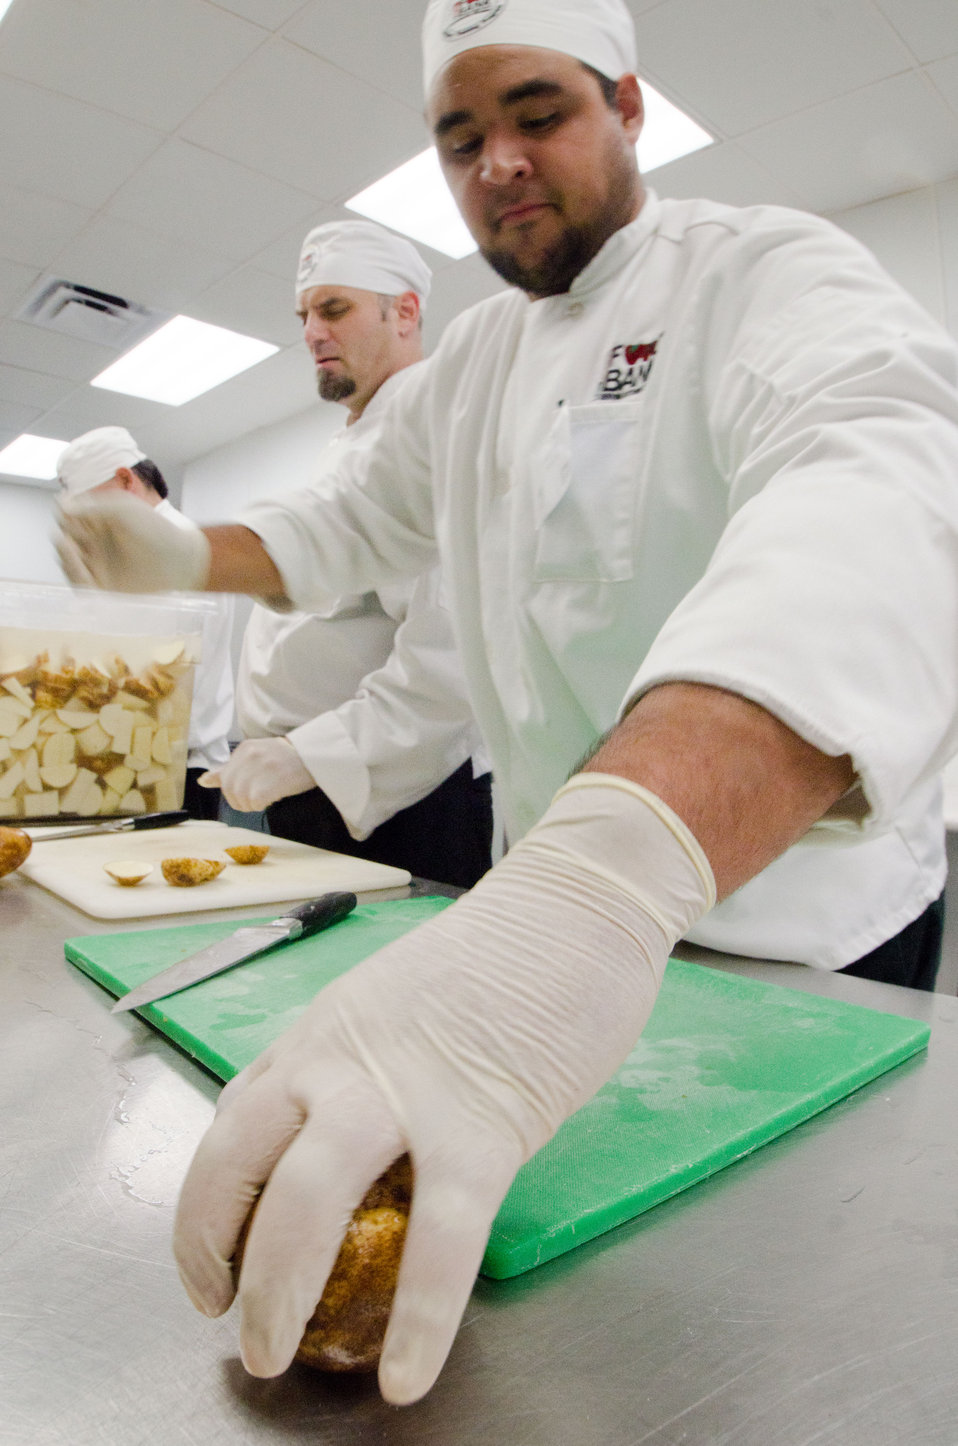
The San Antonio Food Bank (SAFB) Community Kitchen student Sergio Baiz (right) is part of Class 35, who are cutting potatoes that will be cooked and mashed for Kids Cafe meals being prepared by Community Kitchen Class 35, in San Antonio, TX, on Monday, October 31, 2011. Other meals prepared by the Community Kitchen include the U.S. Department of Agriculture (USDA) Summer Food Service Program for children during summer months, and the year-round Child and Adult Care Feeding Program (CACFP). The Community Kitchen trains the unemployed, feeds the hungry, and generates public support and revenue through social enterprise. They began creating meals in 2003, with volunteers and the Community Kitchen students looking to further themselves in a promising culinary career. Over 16-week course individuals receive basic culinary training, similar to portions of an accredited culinary institution, to develop their culinary job skills. The program is lead by Chef Rudy Garza and his team of instructor chefs, present training and work demands that build useful job skills. The students focus their new talents on the preparation of meals for area shelters, kids cafes, summer feeding sites (www.summerfood.usda.gov/), and catering services. The San Antonio Food Bank is a non-profit organization that serves as a clearinghouse by receiving and storing truckloads of donated food, produce, and other grocery. SAFB distribute these items to over 500 service agencies that help people in need.
“We couldn’t do what we do without our partnership with USDA’” said President and CEO Eric Cooper. He continues, “We are privileged in partnering (with the USDA) to feeding kids, through the summer, with the Summer Food Service Program, and throughout the year, with the Child and Adult Care Feeding Program (CACFP). Then in our approach to feeding seniors, we partner with USDA in the Commodities Supplemental Food Program (CSFP), and the Senior Farmer’s Market (Nutrition) Program. And then work to bring all our (needy) parties together with our Supplemental Nutrition Assistance Program (SNAP) Outreach. You know, once families have access to food we believe it is important to educate them. Through the support of the SNAP-Education Program we are able to educate them during their time of need. With this comprehensive approach we are really able to get the right food, at the right amount, at the right time, to needy families throughout our community – which allows us to feed the fifty-eight thousand we do, each week.”
SAFB serves 16 counties in Southwest Texas and states, “Nearly one out of every four children and one out of every five adults in Southwest Texas lives in poverty and has difficulty meeting basic nutritional needs.” According to SAFB, sixty-five percent of the people requesting emergency food have children. “Additionally, the senior citizens and those living on a fixed income generally have limited funds for a consistent grocery budget.”
San Antonio is the seventh largest city in the nation with surrounding farms and ranches near its rivers and water supplies. When available they provide fresh surplus produce. Other commodities come from the food industry and manufacturers. The major food brand companies that for various reasons have surplus commodities donate it to SAFB.
The United States Department of Agriculture donates commodities through programs such as The Emergency Food Assistance Program (TEFAP), while Texas farmers supply fresh produce to their Fresh Produce Program.
Public donations come in the form of money, food, volunteer time, and advocacy. Their fleet of trucks to pickup and deliver food as needed.